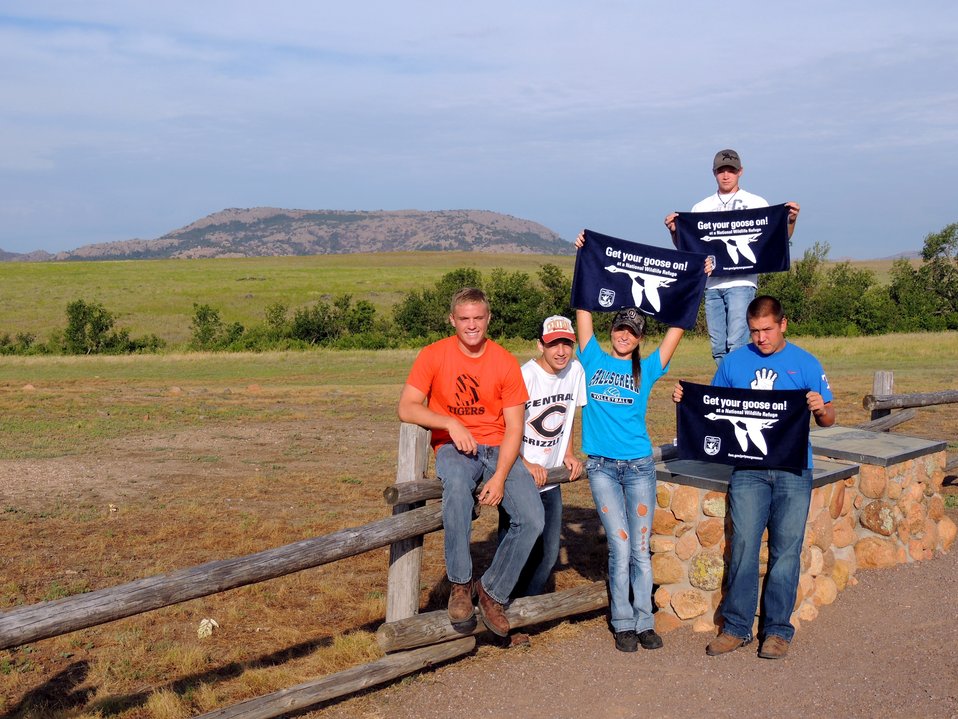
Get Your Goose On!

Wichita Mountains National Wildlife Refuge in Oklahoma.